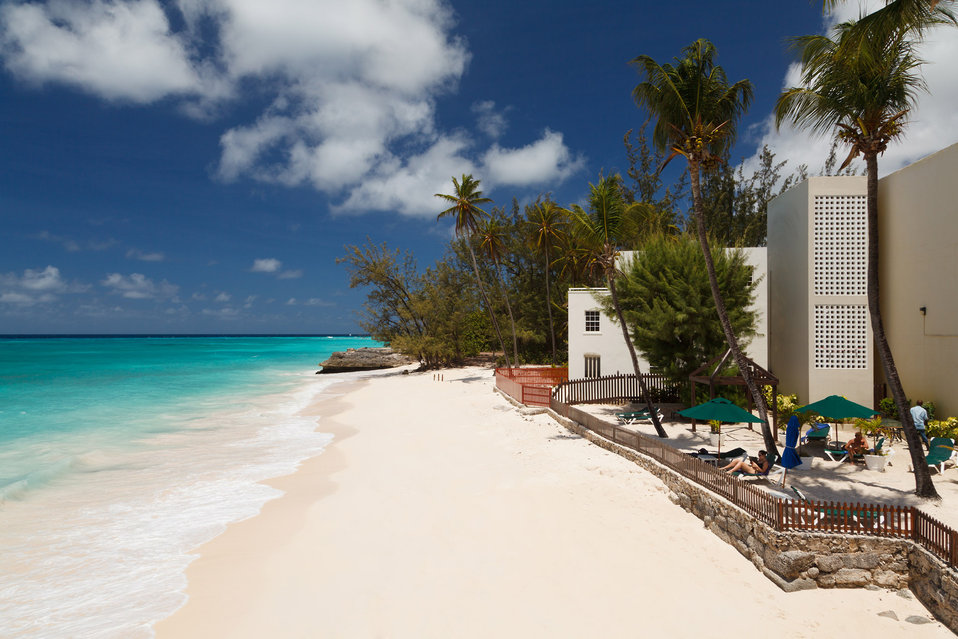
Sea, beach and hotel

Tropical beach with hotel buildings.